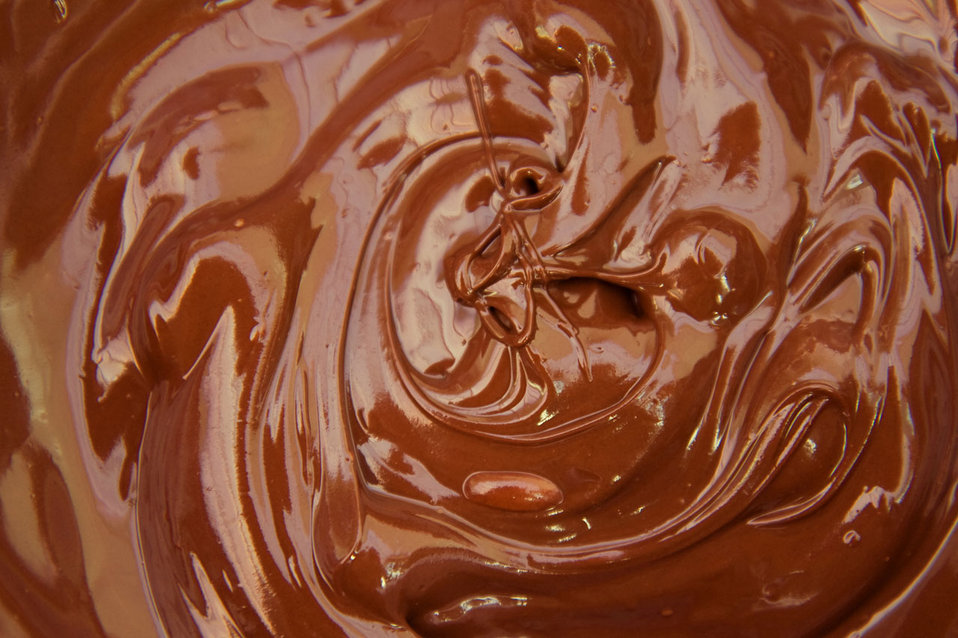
Chocolate

Melted milk chocolate.